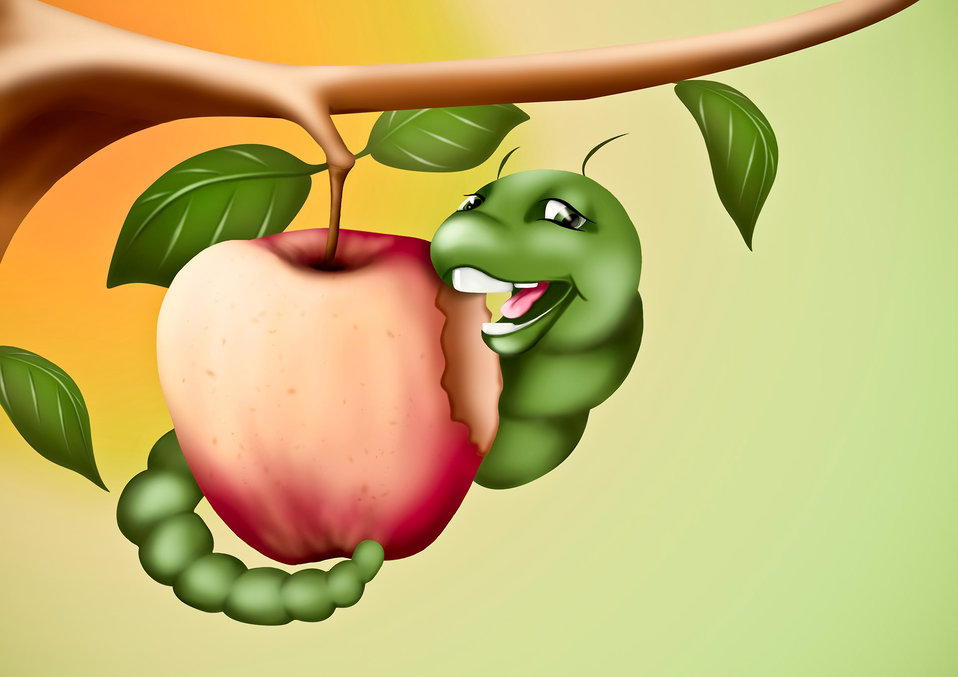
The happy caterpillar.

Children's illustration with a cheerful caterpillar eating a delicious apple..